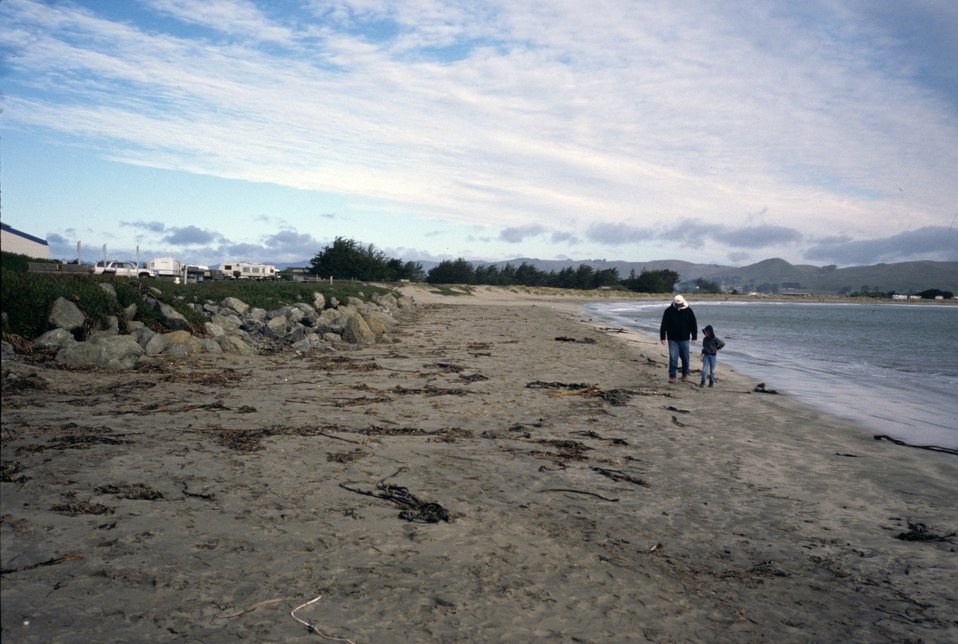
Doran Beach